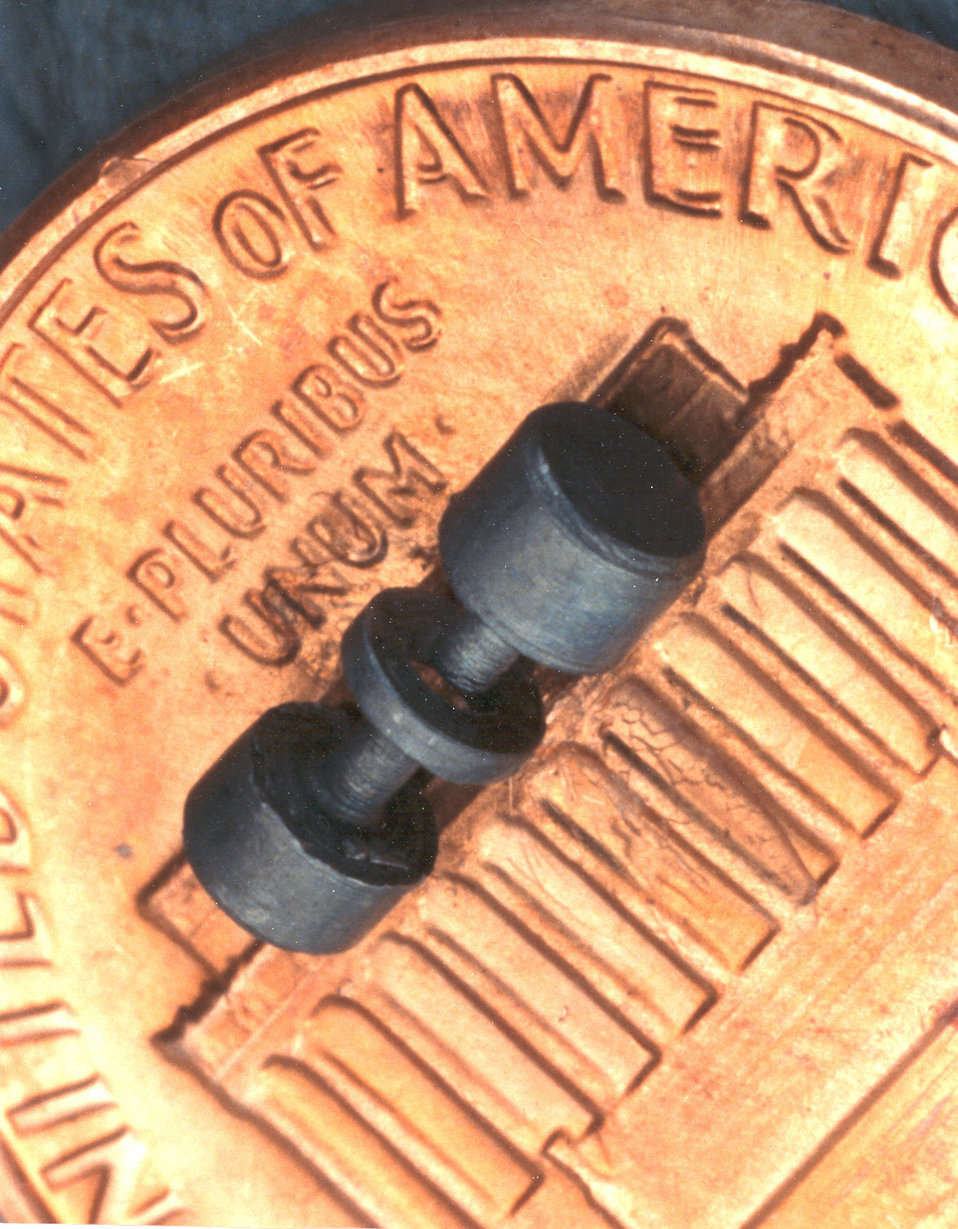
Ion Trap

Electromagnetic trap used to hold a single mercury ion as part of a NIST atomic clock based on optical frequencies. Trap is shown sitting atop a penny for scale.